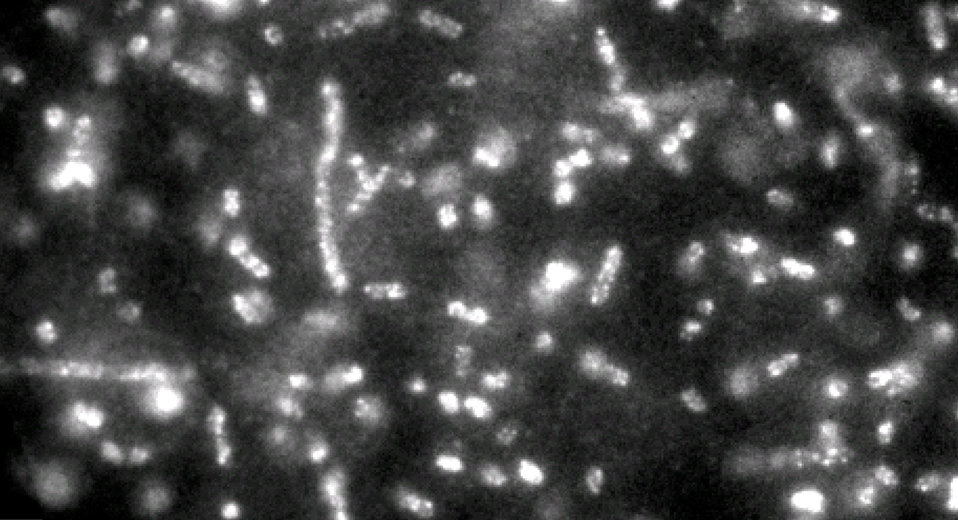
Identifying Bacteria with Quantum Dots

This fluorescence micrograph shows phage-quantum dot complexes (bright spots) bound to E. coli cells (cylindrical shapes). The NCI/NIST method of tagging cells with quantum dots can be used to identify bacteria much faster than conventional methods. The fluorescence signal is strong and stable for hours, enabling scientists to count the number of phage viruses bound to a cell.